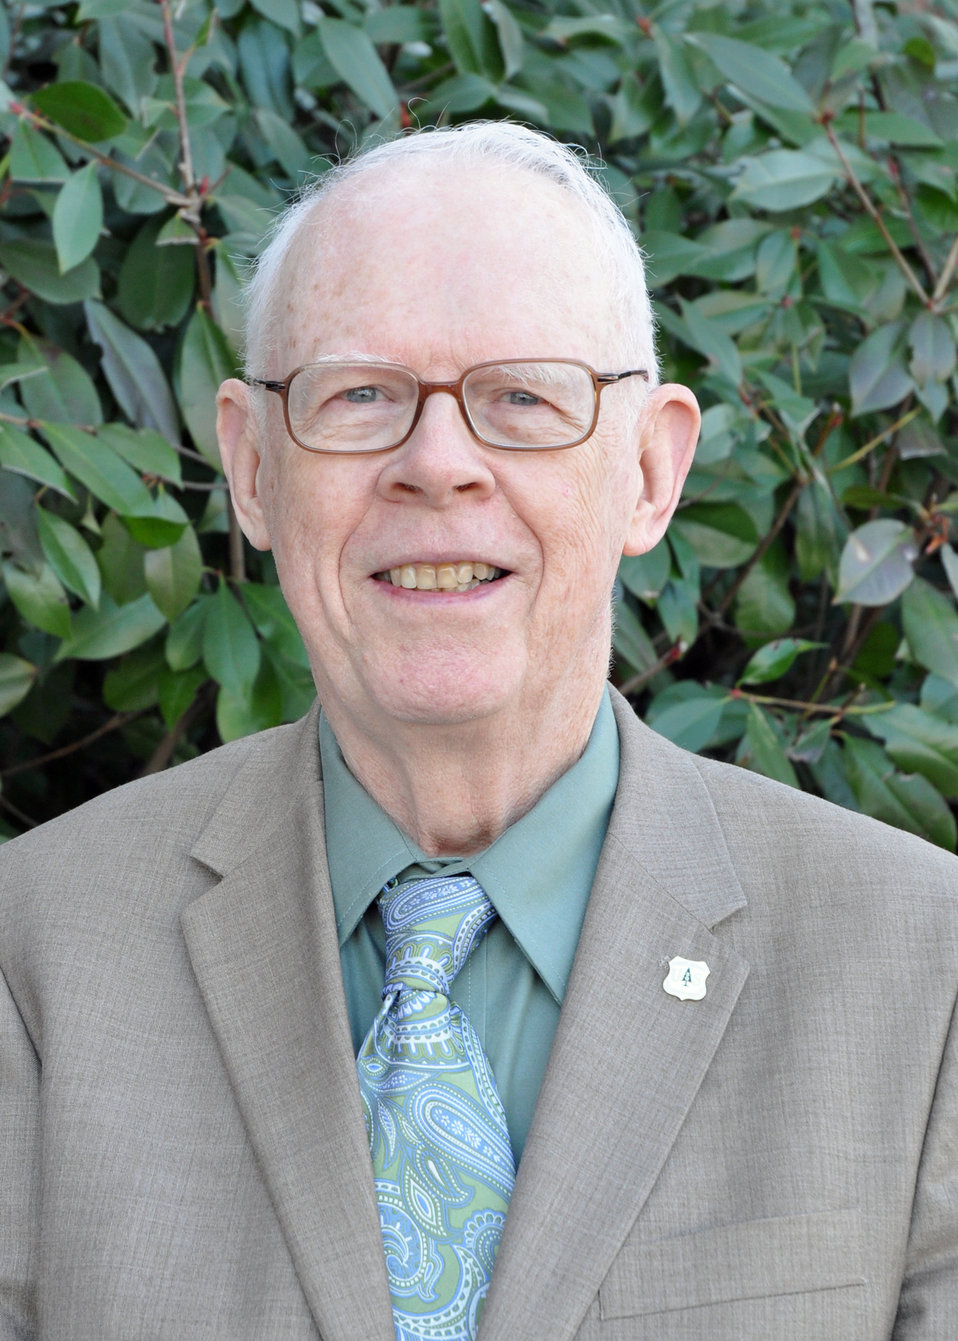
Fitz

U.S. Department of Agriculture (USDA) U.S. Forest Service (USFS) Forest Management Assistant Director Dick Fitzgerald says it’s the variety of work and working with the highly-educated sharp young folk in the agency that contributes to his joy of the work challenge.